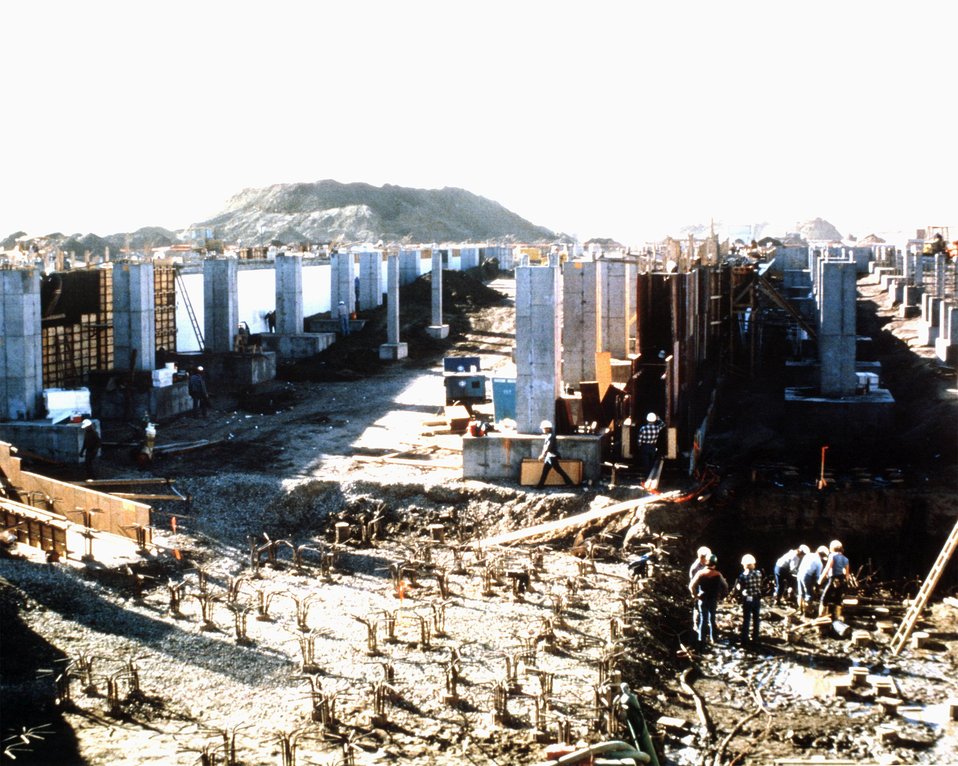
WORKERS ARE BUILDING THE FOUNDATION OF PART OF THE COAL GASIFICATION PLANT.

THE GREAT PLAINS COAL GASIFICATION PLANT WILL PRODUCE AN AVERAGE OF 125 MILLION CUBIC FEET PER DAY OF SYNTHETIC HIGH-BTU GAS. THIS GAS, A DIRECT SUBSTITUTE FOR NATURAL GAS, IS TO BE MARKETED THROUGH AN INTERSTATE NETWORK OF GAS PIPELINES. APPROXIMATELY 14,000 TONS OF LIGNITE WILL BE FED EACH DAY INTO 12 LURGI GASIFIERS (2 ADDITIONAL GASIFIERS WILL BE KEPT ON STANDBY). GAS EXITING THE GASIFIERS WILL BE COOLED, CLEANED OF SULFUR, AMMONIA, AND OTHER IMPURITIES, THEN UPGRADED TO A PIPELINE QUALITY SYNTHETIC NATURAL GAS. THE LURGI PROCESS WILL USE THE LARGER-SIZED COAL FROM THE PLANT'S COAL CRUSHING OPERATION WHILE SOME 8,000 TONS PER DAY OF THE SMALLER SIZE COAL WILL BE SOLD TO AN ADJACENT STEAM ELECTRIC GENERATING PLANT. THE GREAT PLAINS PLANT WILL ALSO PRODUCE 93 TONS PER DAY OF AMMONIA AND 85 TONS PER DAY OF SULPHUR.